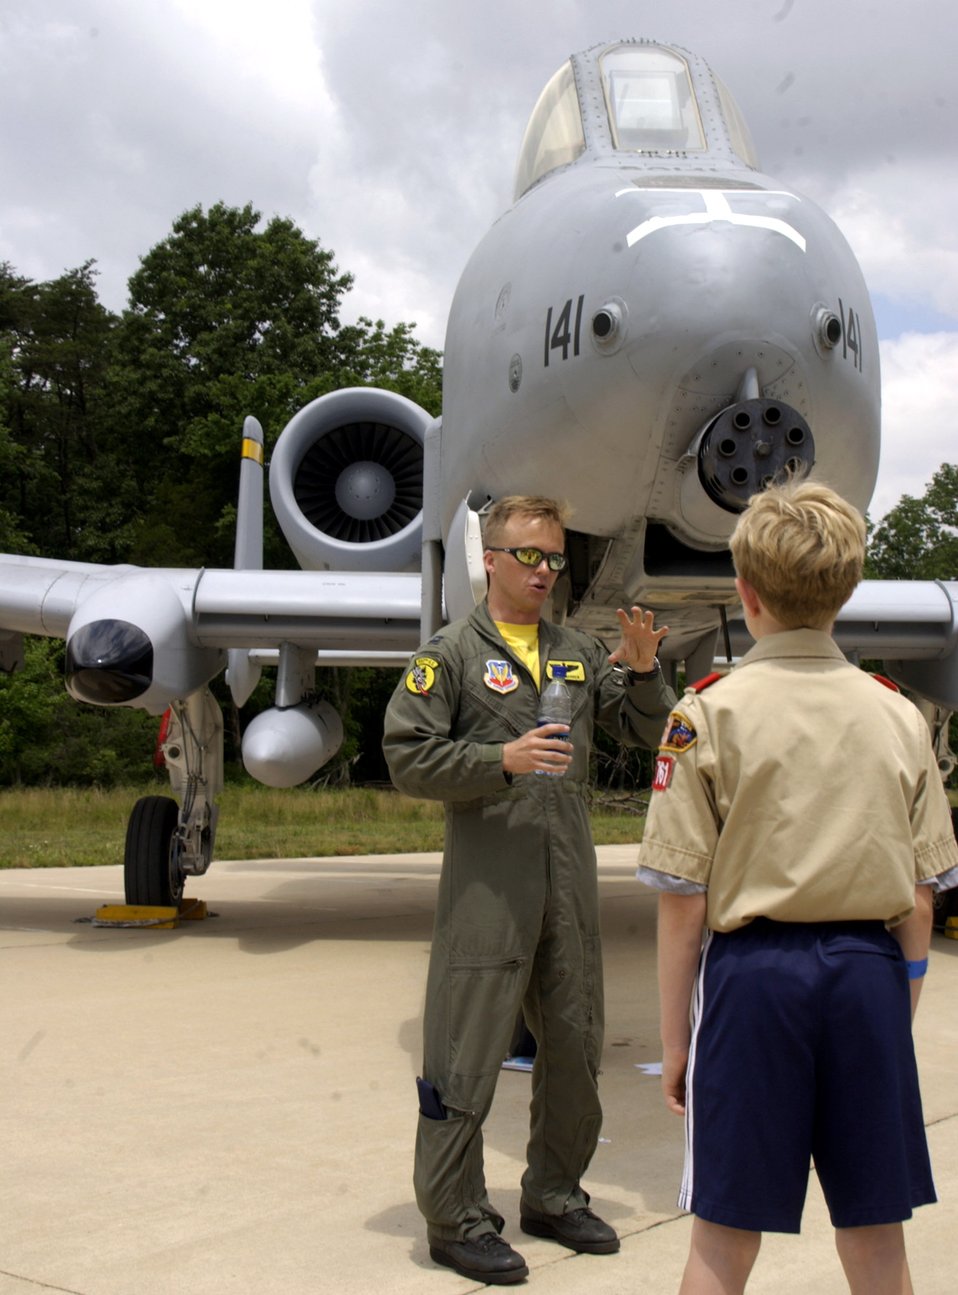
National Air and Space Museum family day wows visitors

Capt. Britt Warren talks with a visitor about the A-10 Thunderbolt II during the